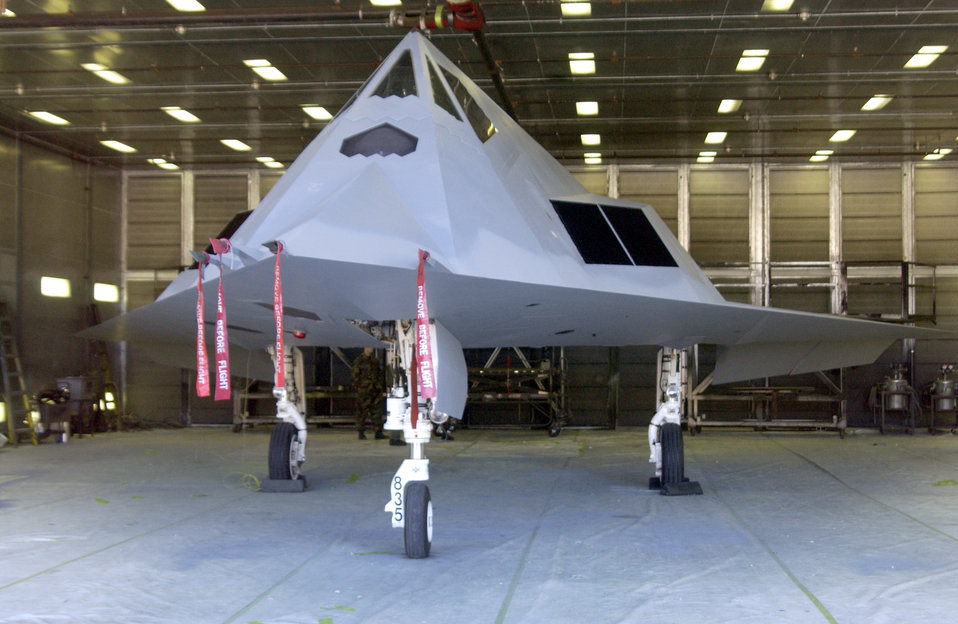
A Nighthawk in Raptor's clothing

HOLLOMAN AIR FORCE BASE, N.M. -- An F-117 Nighthawk sits in its hangar after being repainted. The aircraft, owned by the 53rd Test and Evaluation Group's Detachment 1 here, was repainted gray as part of a test to determine whether the F-117 can have a role in daytime combat operations. Normally painted black, the stealth fighters are used for night missions.